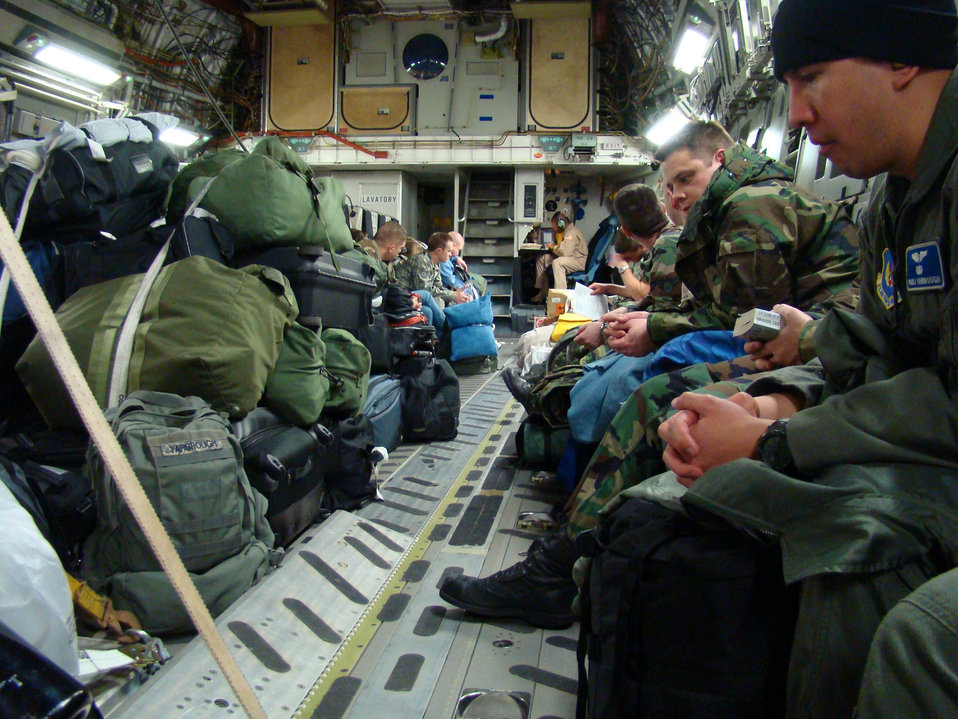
Multiservice team provides presidential support in Africa

Airmen settle in on board a C-17 Globemaster Feb. 12 to support President George Bush's visit to Ghana scheduled for the upcoming weeks. The six-hour flight out of Charleston Air Force Base, S.C., took the Airmen to join other Soldiers, Sailors and Marines who have deployed to provide forward operating support for the president's visit in Africa.